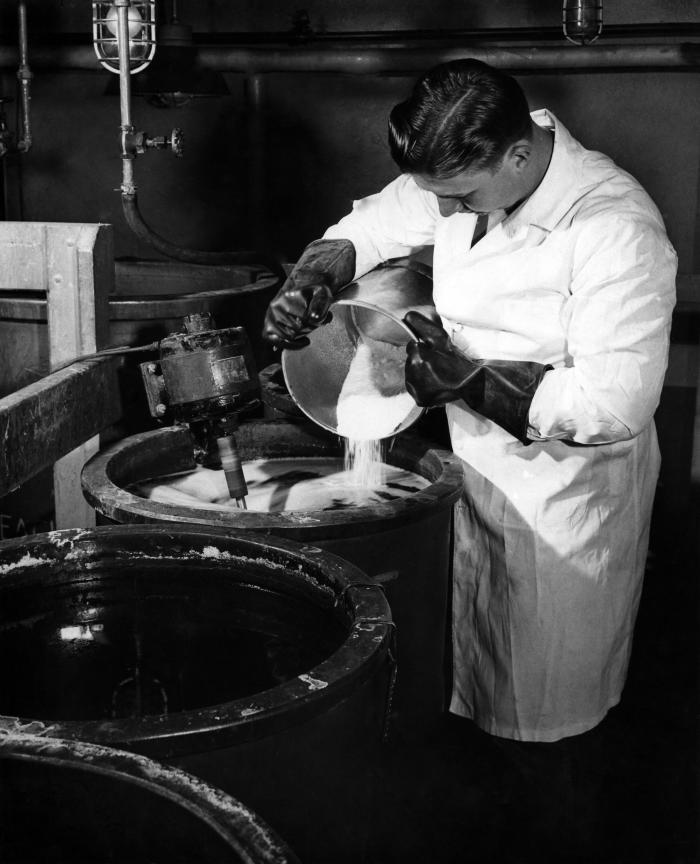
This historic image, provided by the Center for Disease Control's (CDC), National Institute for Occupational Safety and Health (NIOSH), depicted an Ansco (Anthony & Scovill) Photo Products, Inc., New York, photochemical technician who was wearing heavy-duty gloves while pouring an unidentified powder into a mechanical mixing vat to prepare photochemicals. Though the technician was partially protected, he was not wearing any eyewear, facial guard, or filtered inhalation device, which nowadays would be considered normal required protocol. This image was published in the July, 1948, edition of the 'Industrial Bulletin NY', p. 38, and the April, 1951, edition of the 'Industrial Health Monthly/Industrial Hygiene Newsletter'.In gaining a better understanding of workplace hazards, through hands-on and on-site information acquisition, protocol-formulating bodies such as NIOSH, are better able to create a safer workplace through substantiation of appropriate safety regulations